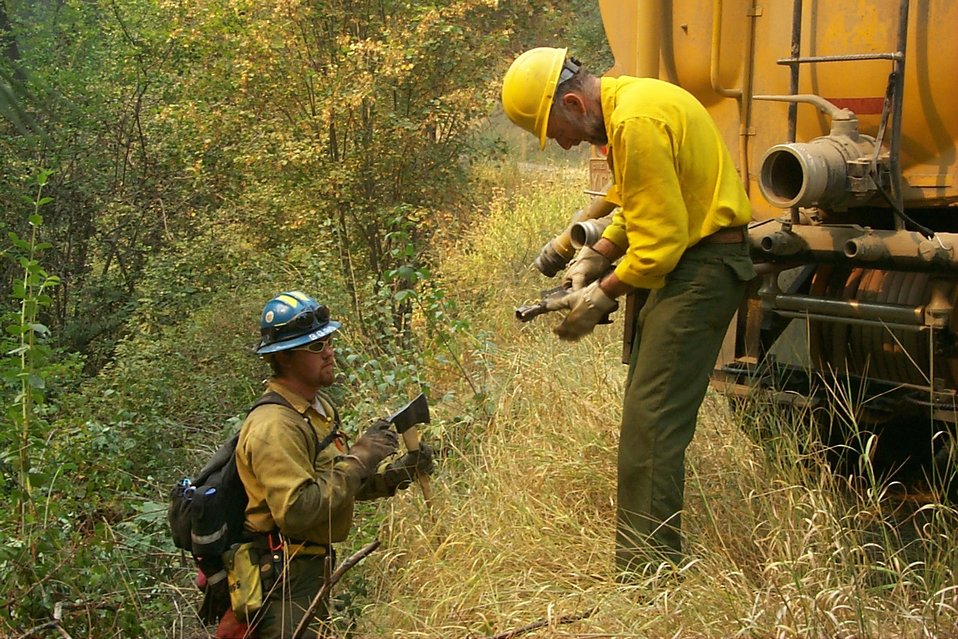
Fire engine axes Fire Clearwater Fire Salmon Field Office USRD Upper Snake River District